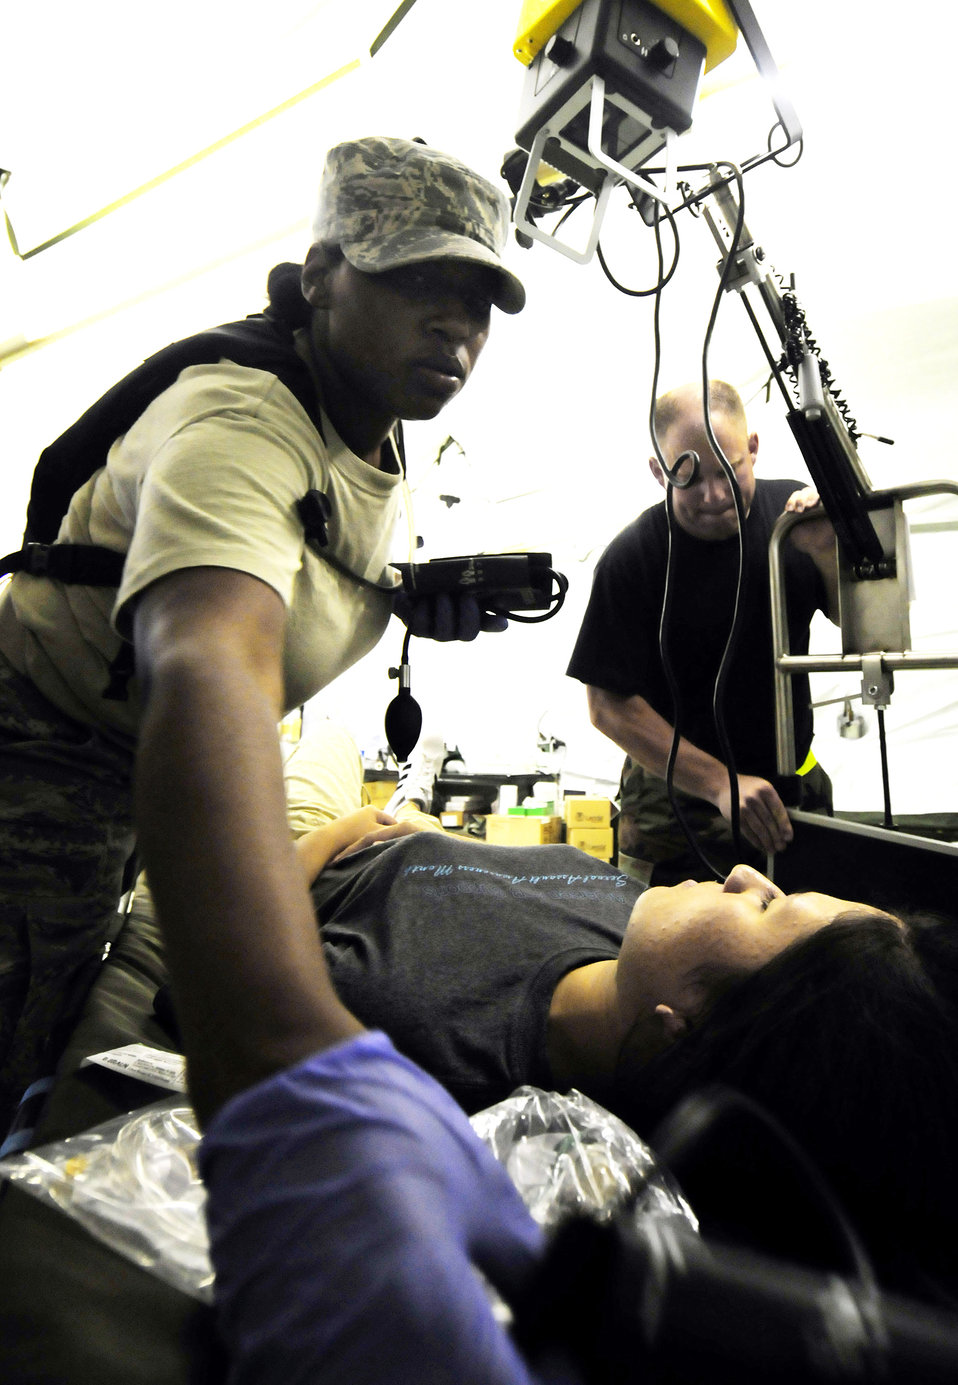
Humanitarian assistance team completes evaluation at Andersen

Staff Sgt. Brandy Verette sets up patient Airman 1st Class Jeanie Snyder for an X-ray during a simulated mass casualty exercise for the Humanitarian Assistance Rapid Response Team July 15 at Andersen Air Force Base, Guam. The HARRT is equipped to operate in an austere permissive environment during Phase III of disaster relief operations, supporting 350 to 500 patients per day and can be fully operational within six hours of arrival at the disaster site.